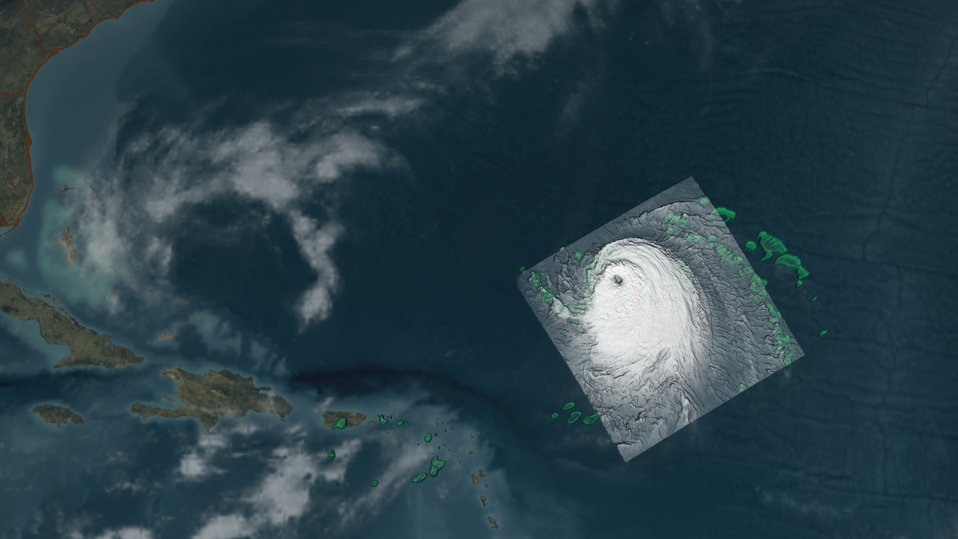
Hurricane Ike on September 4, 2008